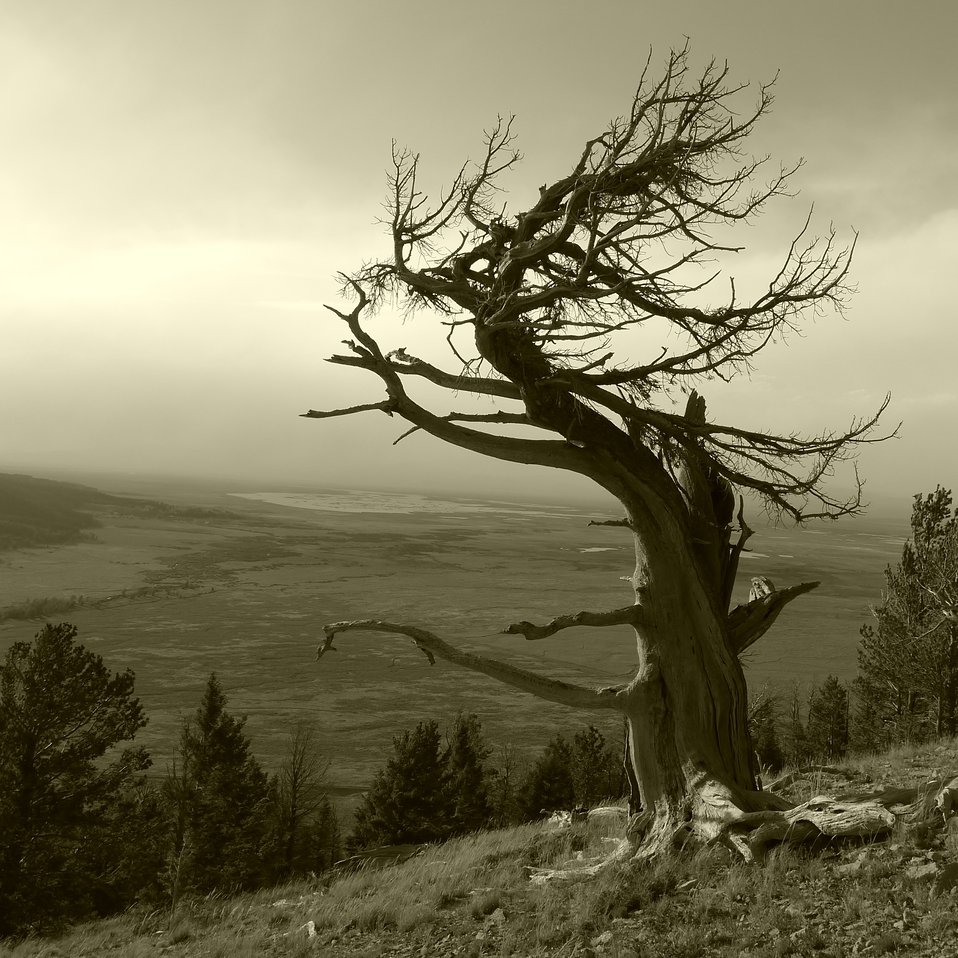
wilderness sentry above Lower Red Rock Lake

Red Rock Lakes National Wildlife Refuge, MT